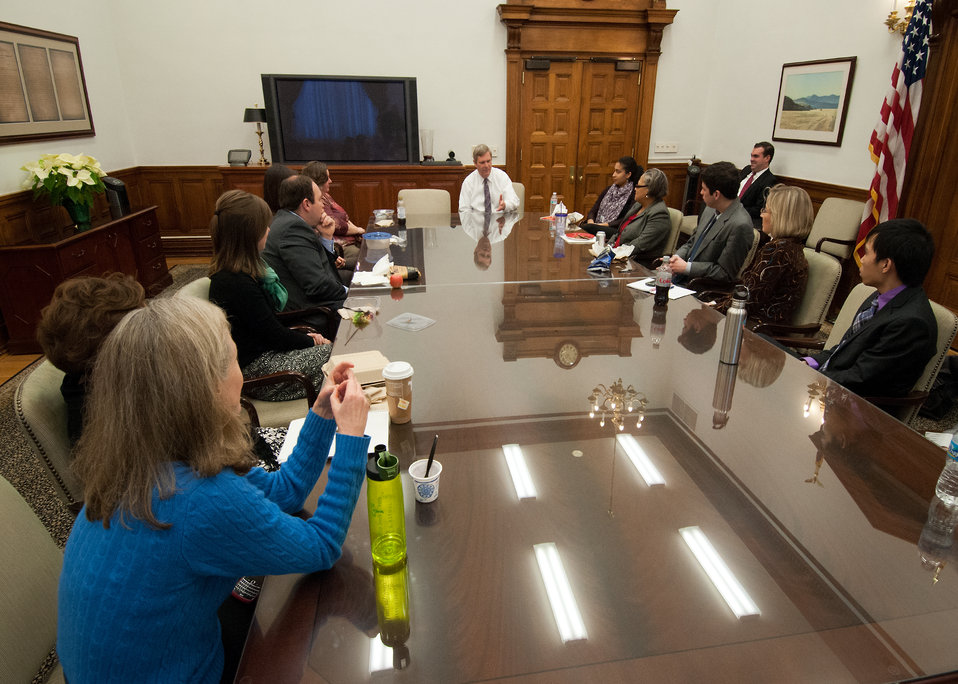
Occasionally Agriculture Secretary Tom Vilsack meets with members of his cabinet for a Brown Bag lunch to discuss the role they play and to thank them for their dedication and diligence. Secretary Vilsack met with staff members of the Office of Congressional Relations in Washington, D.C. on Monday, January 23, 2012. From left: Ann Wright, Deputy Assistant Secretary, Biotechnology, Outreach and Civil Rights, Departmental Administration, Ashlee Johnson, Special Assistant, Monica Wyant, Special Assistant, Todd Batta, Legislative Director, Conservation, Energy, Budget and Appropriations and Dairy, Ashley Martin, Special Assistant, Julie Gordon, Special Assistant, Secretary Vilsack, Ryan Caldwell, Special Assistant, Janice Williams, Special Assistant, Kevin Bailey, Legislative Assistant, Food Nutrition and Consumer Services and Rural Development, Jennifer Yezak, Director, External and Intergovernmental Affairs, Office of Congressional Relations, Duy Dinh, Special Assistant and Brian Baenig (wall), Brian Baenig, Assistant Secretary for Congressional Relations.